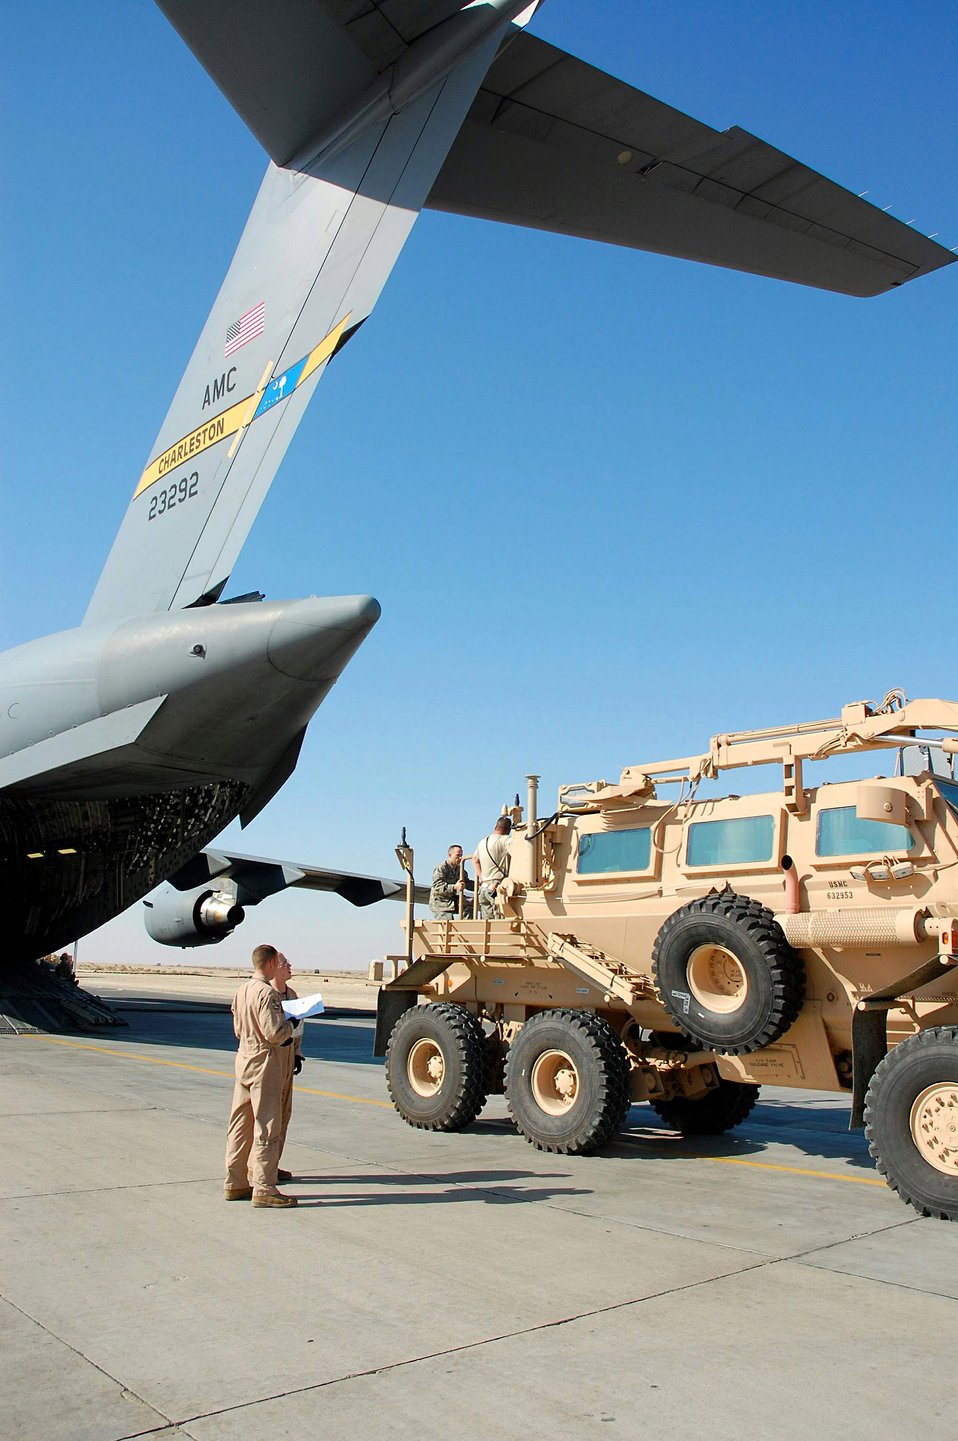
To serve and protect

Airmen from the 386th and 379th Air Expeditionary Wings load a mine resistant ambush protected vehicle onto a C-17 Globemaster III from Charleston Air Force Base, S.C., Dec. 28 in Southwest Asia. The MRAP was heading to Iraq and is designed to help protect military members from mines and improvised explosive devices. The C-17's aircrew members are from McGuire AFB, N.J., and currently deployed to an air base in the Middle East.